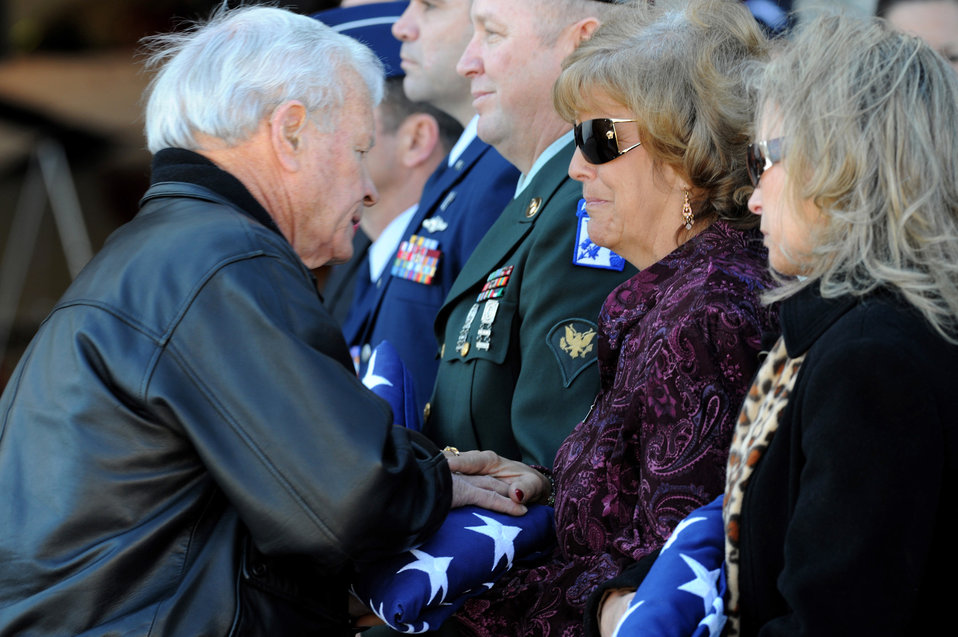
Thunderbird returns to Nellis for final farewell

Former Thunderbird commander retired Brig. Gen. Paul A. Kauttu presents a folded American flag to Christine Stonebraker during the repatriation and funeral ceremony for Maj. Russel C. Goodman at the Thunderbird hanger Jan. 14, 2010, at Nellis Air Force Base, Nev. Mrs. Stonebraker is the daughter of Major Goodman, who served as the narrator for the Air Force Thunderbirds from 1964 to 1965 and was declared missing in action after his aircraft was hit by a surface-to-air missile in February 1967 while on a combat mission over North Vietnam.